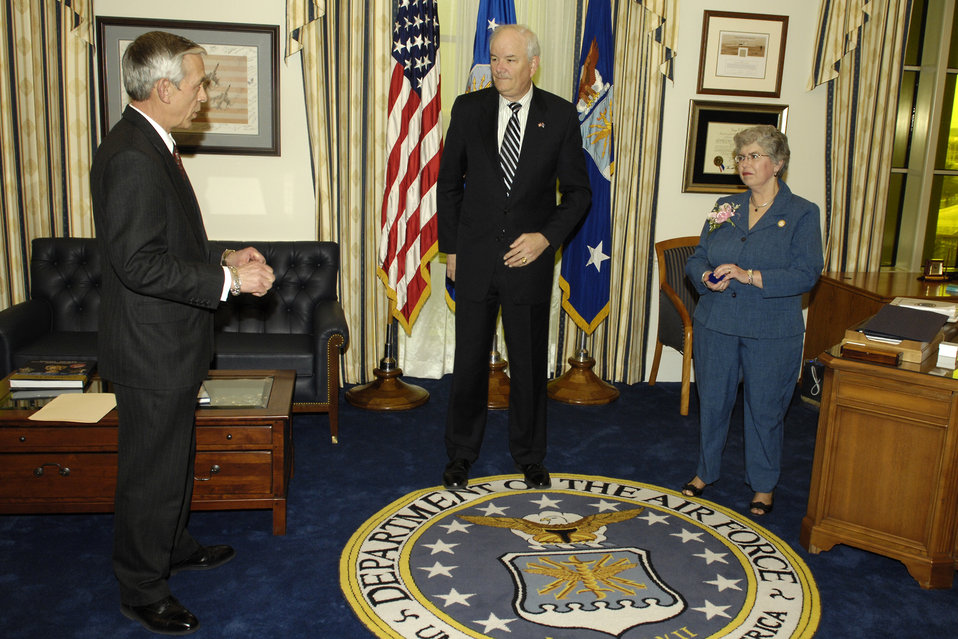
Air Force welcomes new manpower and reserve leader

Craig Duehring (left) and his wife, Terri Blevins Duehring, chat with Secretary of the Air Force Michael W. Wynne shortly before Mr. Duehring is sworn in as the Air Force's new assistant secretary of the Air Force for manpower and reserve affairs in a ceremony at the Pentagon Jan. 24.